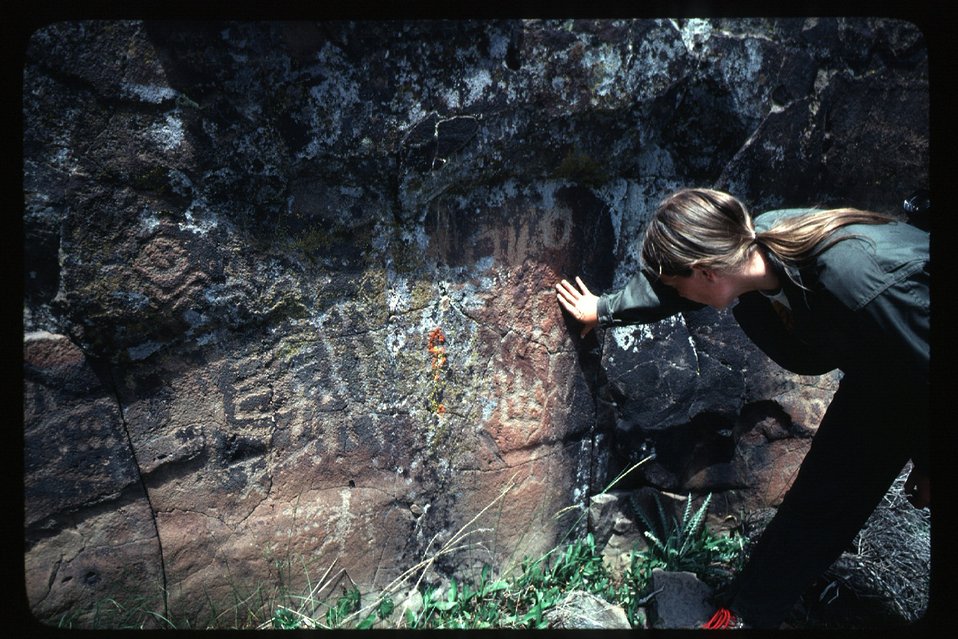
Petroglyphs North East of confluence of Battle Creek and Owyhee Archeology LSRD Lower Snake River District